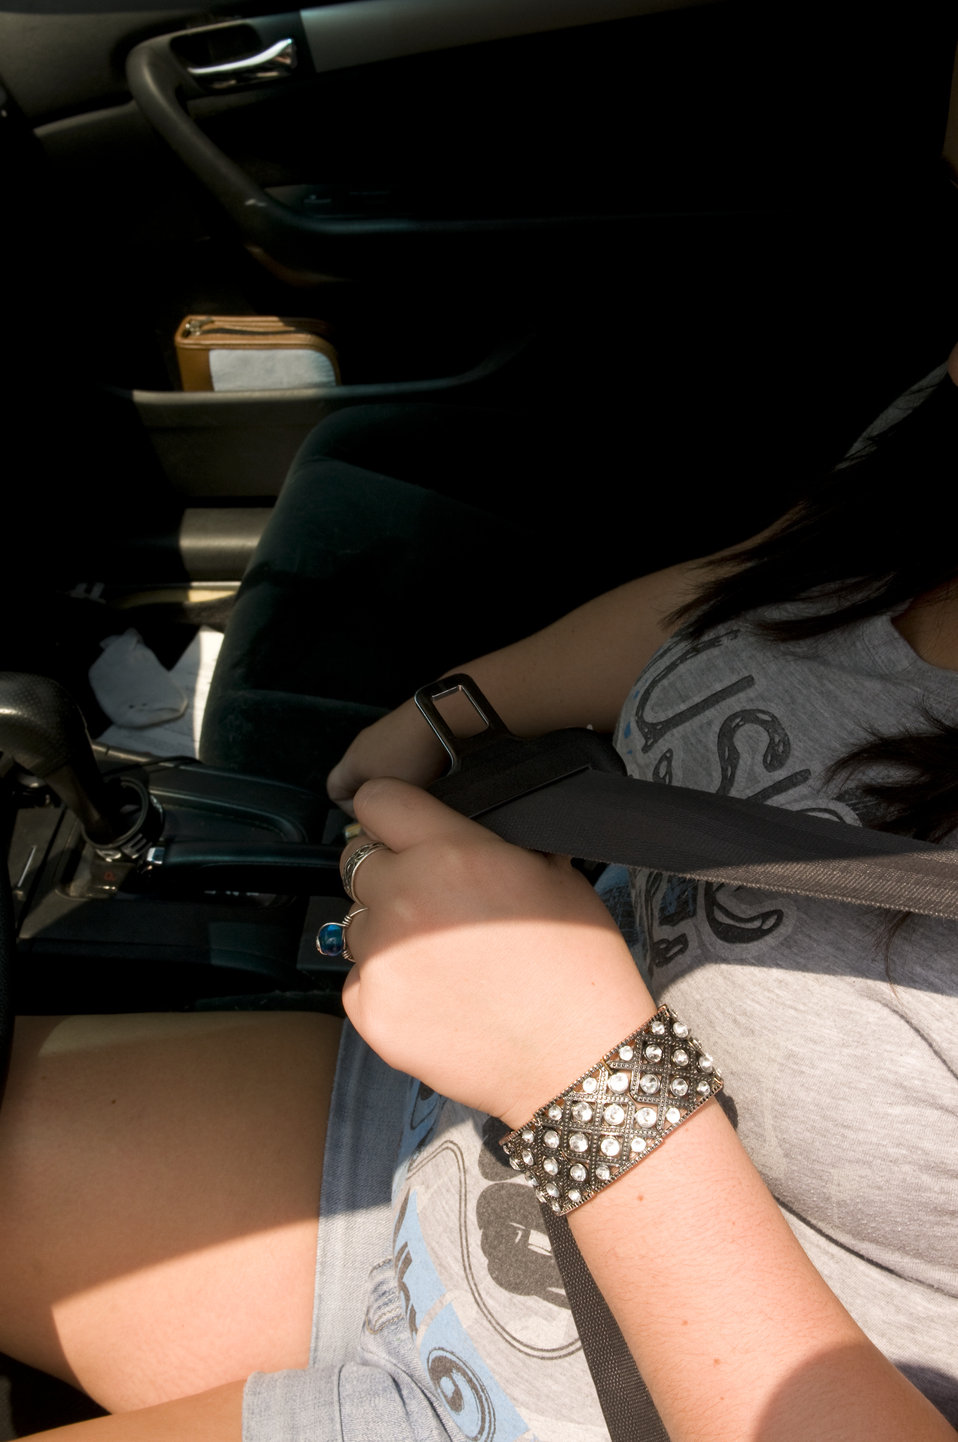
Here we see the hands of a female teenage motor vehicle operator, seated in the driver's seat, and securing her seat belt latch before embarking on a drive.